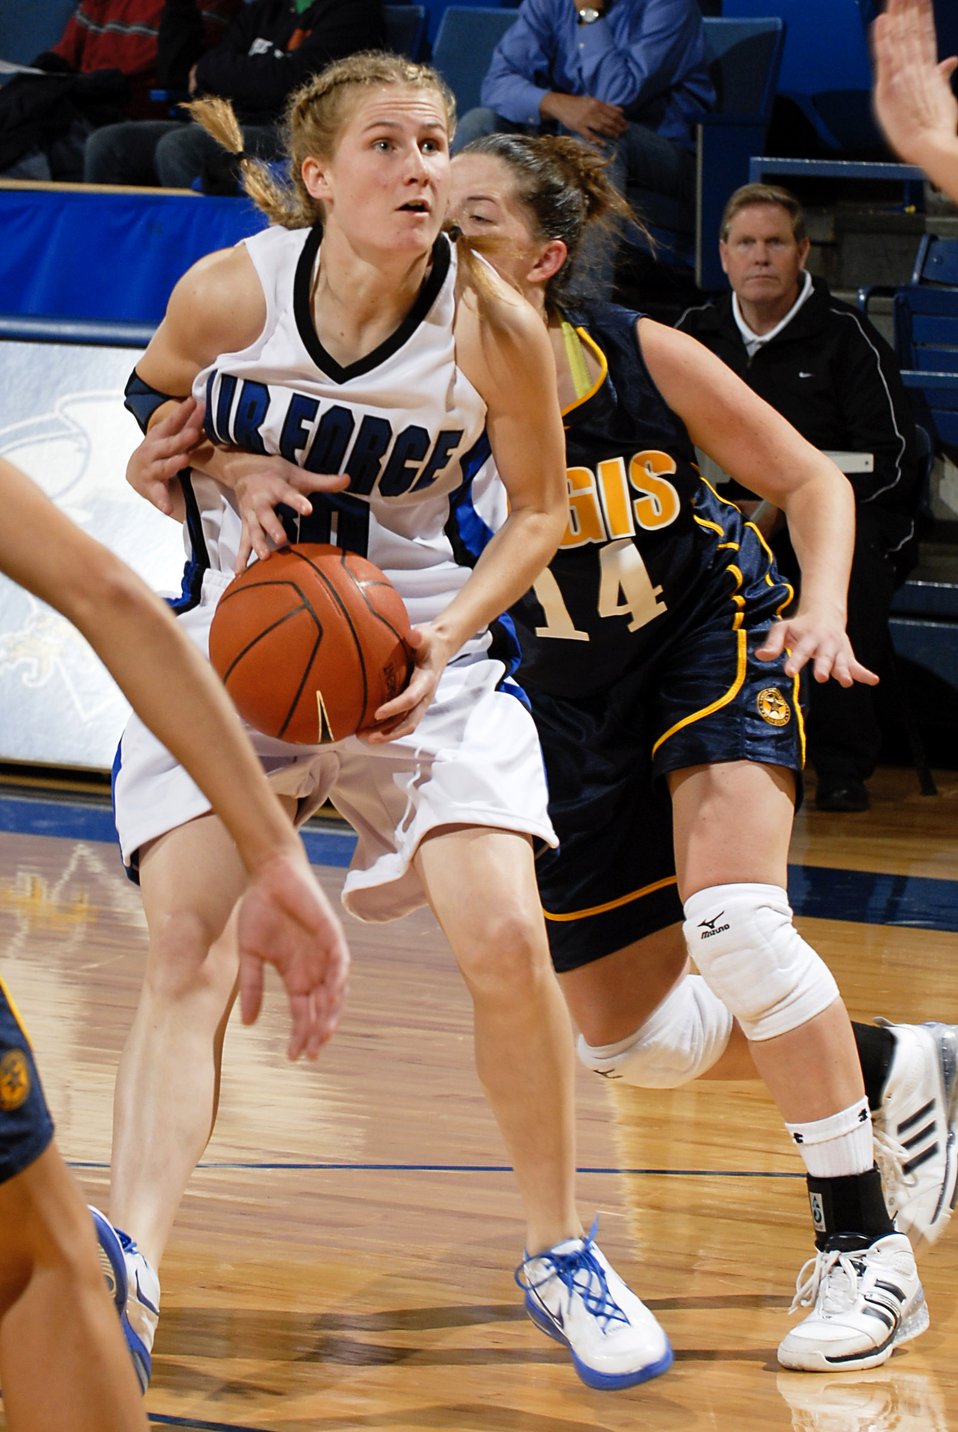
Basketball: Air Force coasts to 89-52 exhibition win over Regis

Air Force Academy senior guard Pamela Findlay looks to pass while being defended from behind by Regis University's Stevi Seitz during the Falcons' 89-52 exhibition win Nov. 3 at the Academy's Clune Arena. Findlay scored 14 points, including 6-of-11 from the floor. The Glenview, Ill., native also grabbed four rebounds and dished out two assists. Air Force opens its regular season Nov. 9 at Oklahoma State.